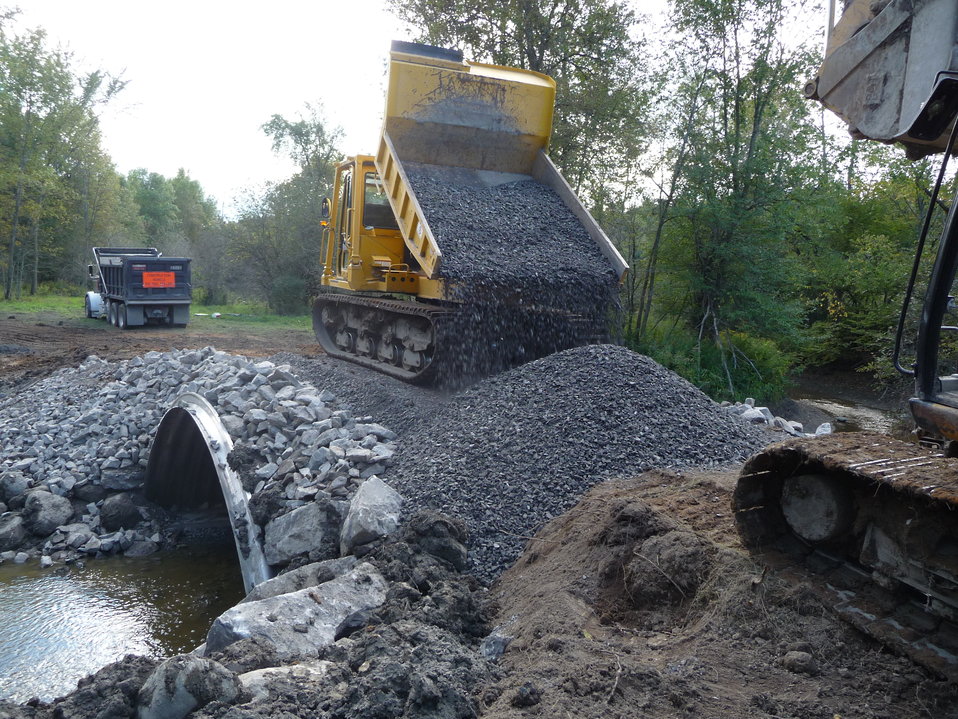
Little Sucker Brook: Construction of stream crossing

The crossing was reconstructed using more stone on top of the bottomless arch.

The landowner donated use of a skid steer to load stone onto the dump truck.